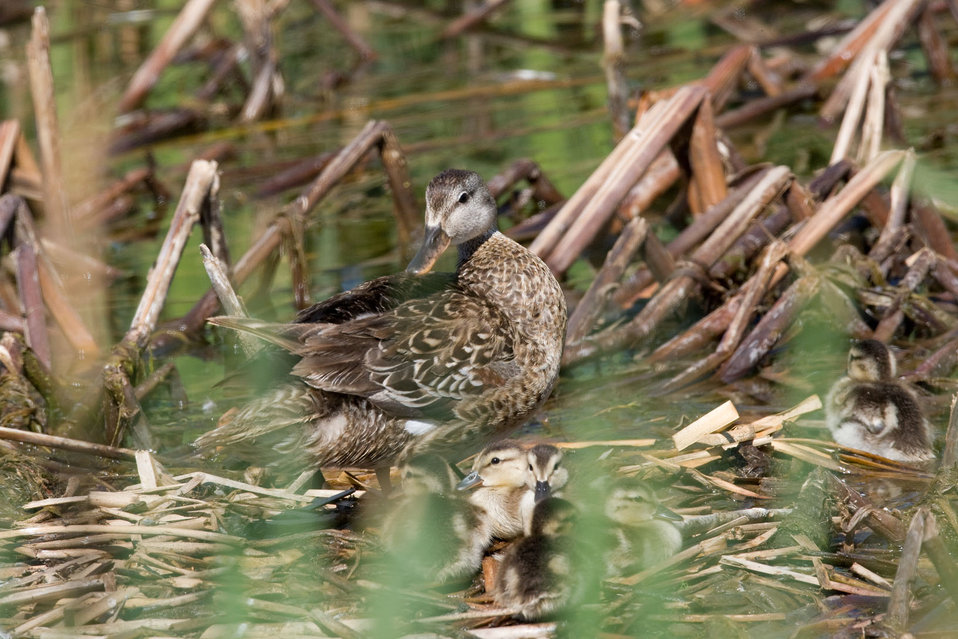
A Mallard Hen Keeping her Ducklings Close

The lands of the refuge were established to protect and provide habitat for migratory birds that cross State lines and international borders and are by law a Federal trust responsibility.

The refuge is of great value to waterfowl and shorebirds, as well as other migrating water-dependent bird species, because of the diversity of wetland and upland habitats that provide for the diverse life cycle needs of these species.